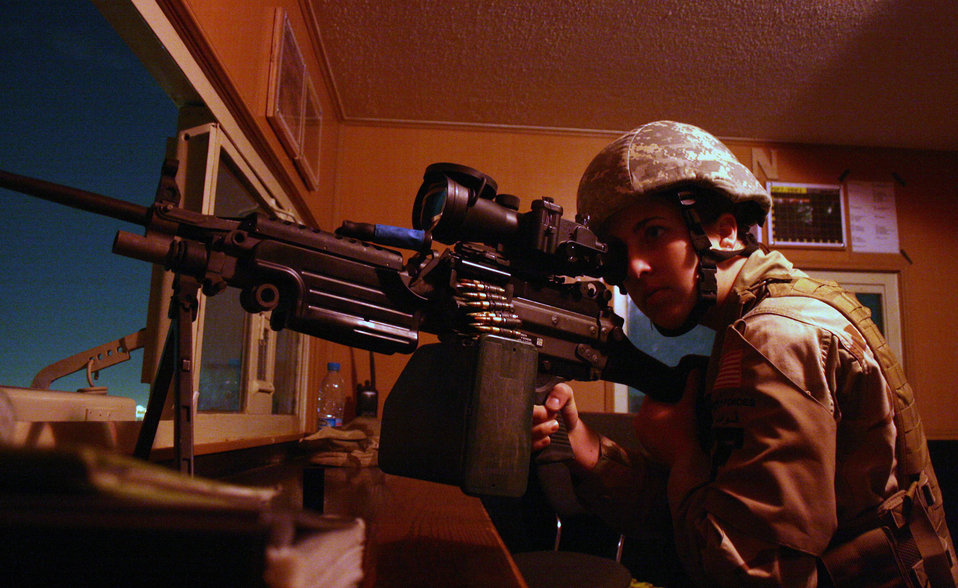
Reserve liaison office answers for AOR

Senior Airman Rachel Albee watches a perimeter at a Southwest Asia base Oct. 1. The 64th Air Expeditionary Group there provides force protection and base support to enable U.S. security assistance operations and enhance strategic partnerships. The group is 72 percent Guard, 25 percent active duty, and 3 percent Air Force Reserve, exemplifying total force and joint concepts. Airman Albee is an Air National Guard member with the 64th Expeditionary Security Forces Squadron.